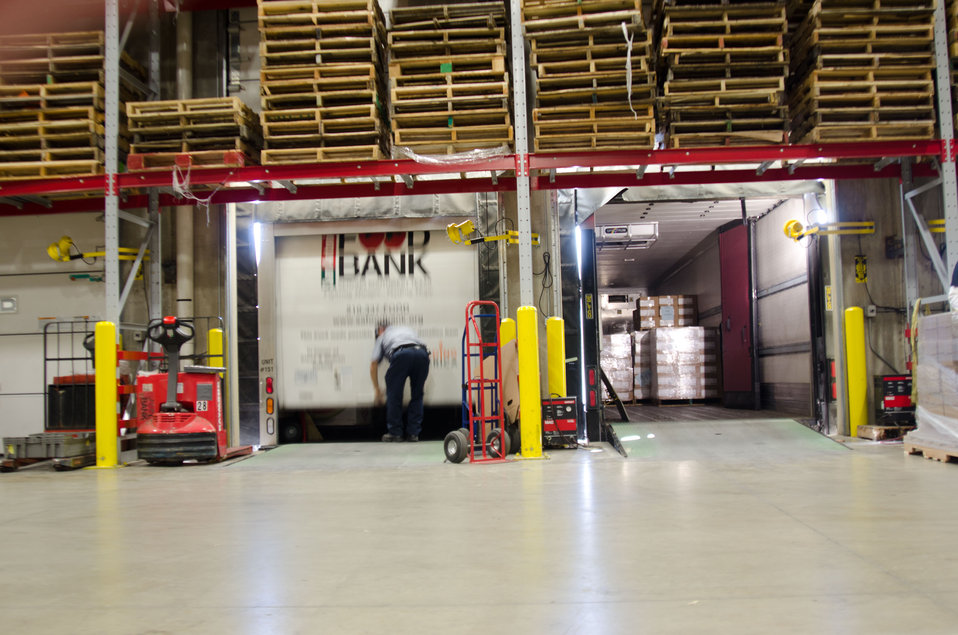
The United States Department of Agriculture donated commodities such as The Emergency Food Assistance Program (TEFAP)(some seen in the open right trailer), are just some of the many sources that make up the more than 44 million pounds of food that flow in and out of the warehouse of the San Antonio Food Bank (SAFB). The Food Bank packages and palletize them for fast distribution from its San Antonio, TX., headquarters, on Monday, October 31, 2011. SAFB is a non-profit organization that serves as a clearinghouse receiving and storing truckloads of donated food, produce, and other grocery products, they then distributes these items to over 500 service agencies that help people in need.
“We couldn’t do what we do without our partnership with USDA’” said President and CEO Eric Cooper. He continues, “We are privileged in partnering (with the USDA) to feed kids, throughout the summer, with the Summer Food Service Program, and throughout the year, with the Child and Adult Care Feeding Program (CACFP). To feed seniors, we partner with USDA in the Commodities Supplemental Food Program (CSFP), and the Senior Farmer’s Market (Nutrition) Program. And then bring all our (needy) parties together with our Supplemental Nutrition Assistance Program (SNAP) Outreach. Once families have access to food we believe it is important to educate them. Through the support of the SNAP-Education Program we are able to educate them during their time of need. With this comprehensive approach we are really able to get the right food, the right amount, at the right time, to needy families throughout our community – allowing us to feed the fifty-eight thousand we do, each week.”
SAFB serves 16 counties in Southwest Texas and states, “Nearly one out of every four children and one out of every five adults in Southwest Texas lives in poverty and has difficulty meeting basic nutritional needs.” According to SAFB, sixty-five percent of the people requesting emergency food have children. “Additionally, the senior citizens and those living on a fixed income generally have limited funds for a consistent grocery budget.”
San Antonio is the seventh largest city in the nation with surrounding farms and ranches near its rivers and water supplies. When available they provide fresh surplus produce. Other commodities come from the food industry and manufacturers. The major food brand companies that for various reasons have surplus commodities donate it to SAFB.
Texas farmers supply fresh produce to their Fresh Produce Program.
Public donations come in the form of money, food, volunteer time, and advocacy.
Their fleet of trucks pickup and deliver food as needed.